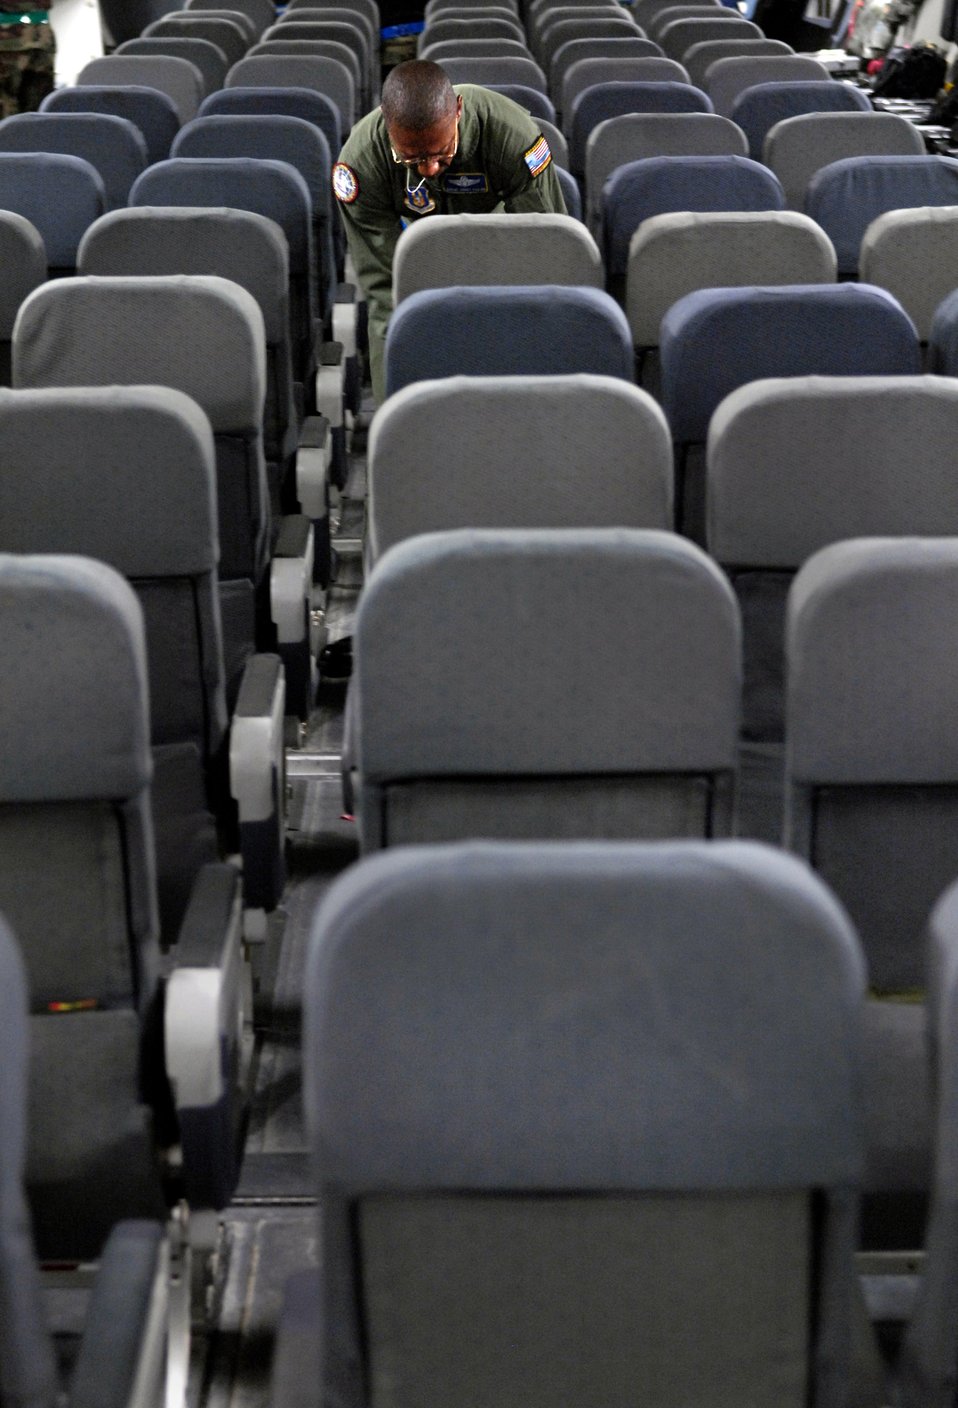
Off to the South Pole

Senior Master Sgt. Terry Philon sets up passenger seating on a C-17 Globemaster III for a winter fly-in mission during Operation Deep Freeze Aug. 20 at Christchurch, New Zealand. A C-17 and 31 Airmen from McChord Air Force Base, Wash., are flying in an augmentation of scientists, support staff, food and equipment for the U.S. Antarctic Program at McMurdo Station.